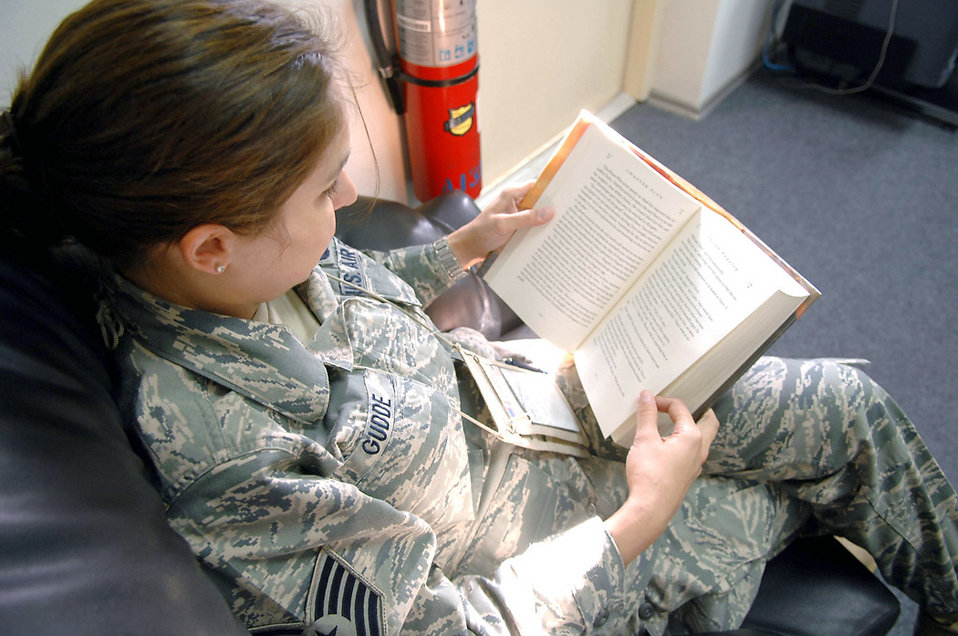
Prepare yourself: Read

Tech. Sgt. Dawn Gudde reads a book at the Manas Air Base Learning Resource Center in Kyrgyzstan. The LRC provides Airmen the chance to relax in a quiet area, take college tests, use phones and computers or simply take in a book. Sergeant Gudde is assigned to the 376th Expeditionary Force Support Squadron.